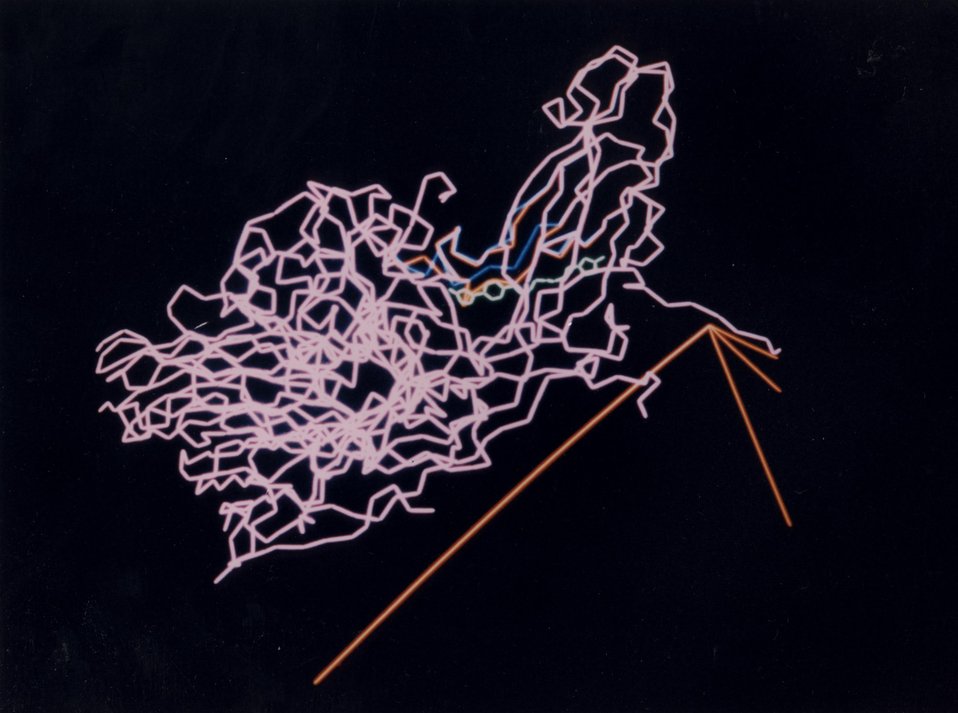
Attacking the Common Cold. A compound with demonstrated antiviral properties is shown here bound within a cleft at the canyon floor, thus inducing a structural change in the virus itself. This structural shift, from blue to red in this computer-generated image, inhibits viral 'uncoating,' a necessary step if the virus is to inject its contents into the host cell.